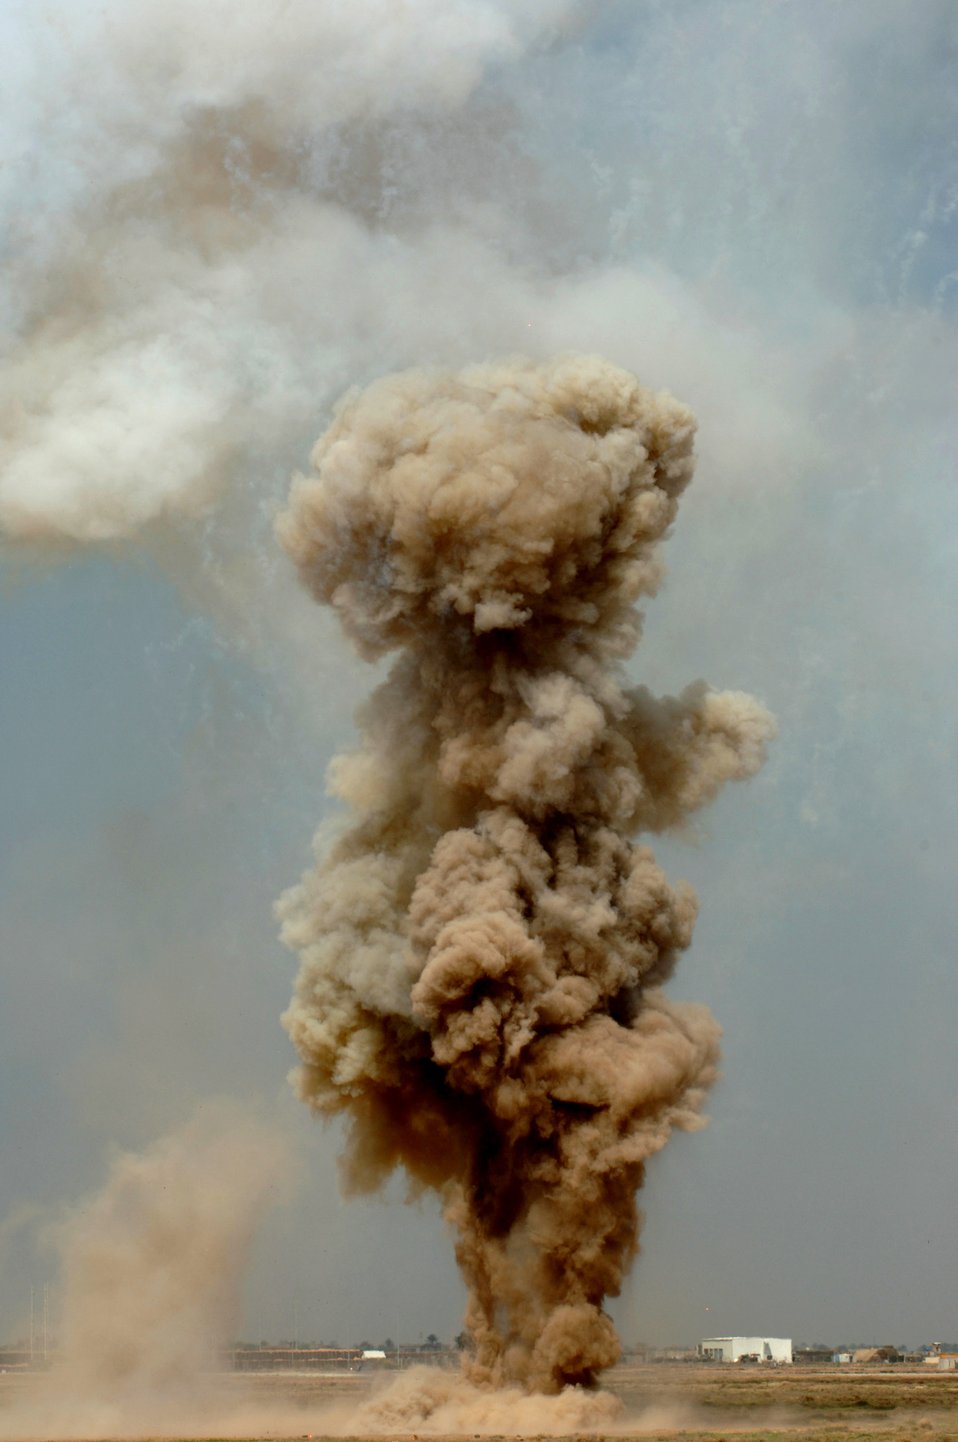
Ordnance disposal makes for no ordinary day

A controlled detonation is conducted March 20 by the 332nd Expeditionary Civil Engineer Squadron's Explosive Ordinance Disposal team at Balad Air Base, Iraq. The EOD team periodically disposes of unserviceable, excess or dangerous ordnance by fabricating explosive demolition charges, in a controlled environment.